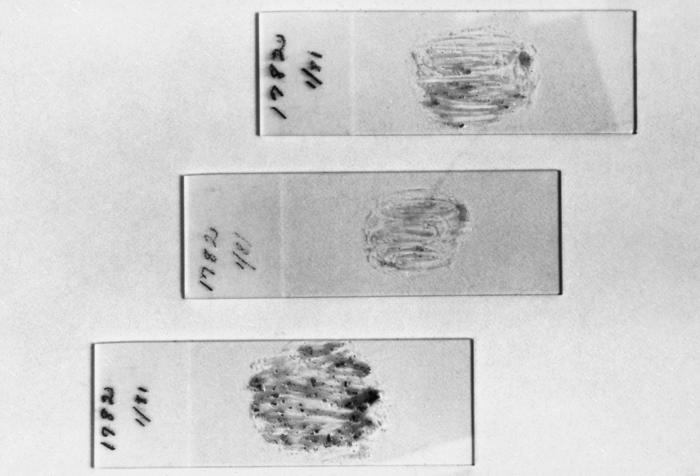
This image provides an evaluation of fecal smear technique. Note: Top - good; Middle - too thin; Bottom - too thick.